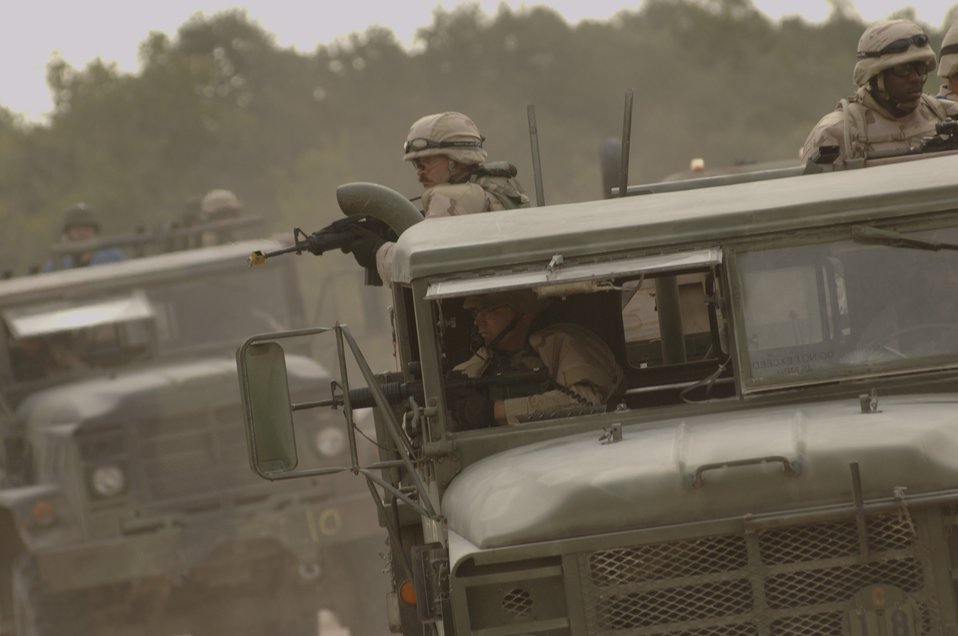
Convoy course training

SAN ANTONIO -- Airmen take part in a truck convoy during a basic combat convoy course on-road training scenario. The course is designed to train transportation Airmen in basic combat skills required to integrate with joint forces in hostile convoy operations. Airmen receive about 300 hours of training to prepare them for security escort and line haul missions with coalition convoys supporting Operation Iraqi Freedom.